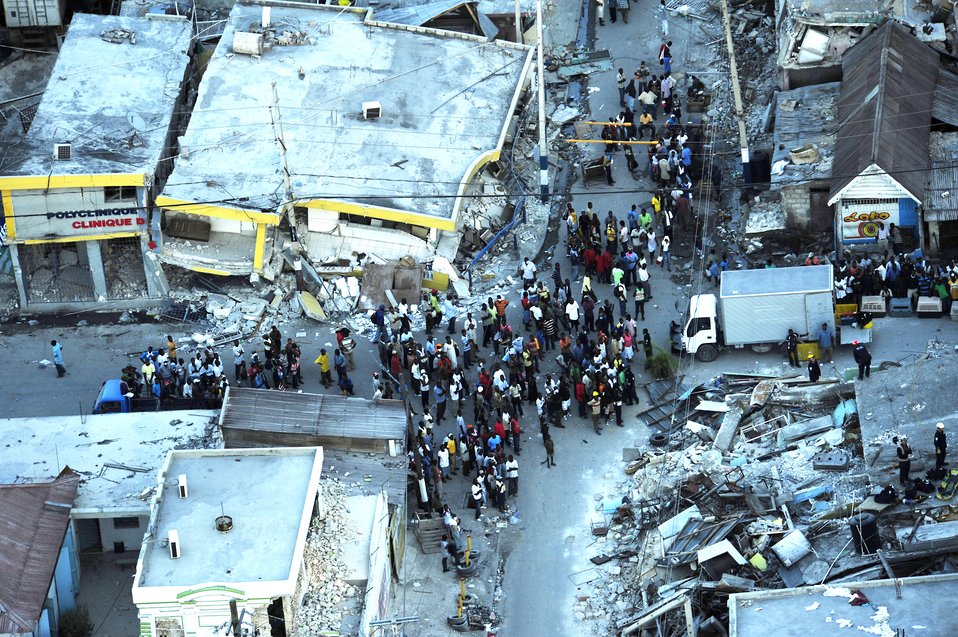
Haiti Earthquake Relief

Image of Port-au-Prince, Haiti taken Jan. 15, 2010 following a magnitude 7 earthquake that hit the city Jan. 12, 2010. Department of Defense assets have been dispatched to Haiti to assist with humanitarian assistance and disaster relief.